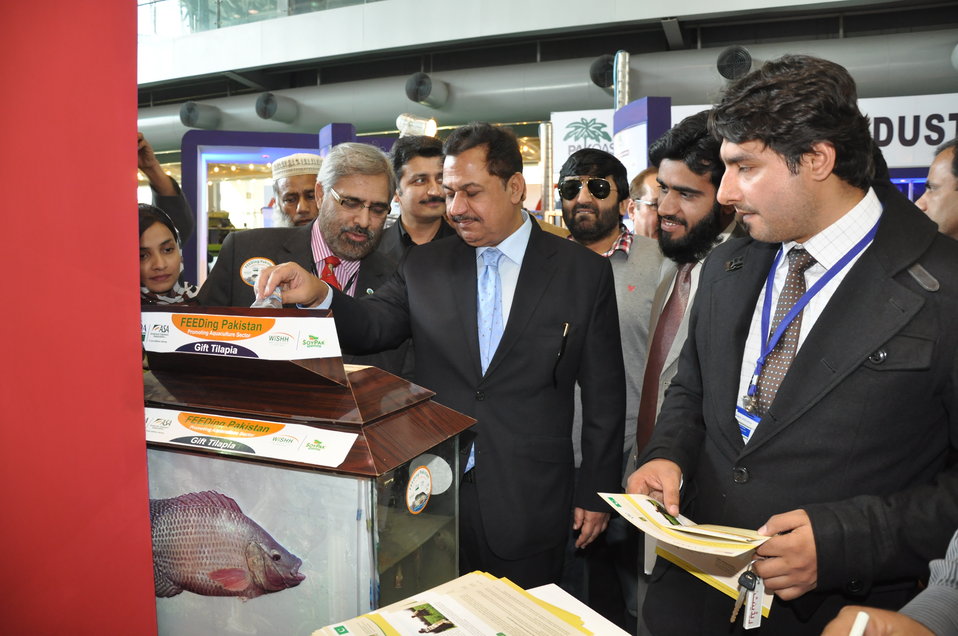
FEEDing Pakistan (Promoting Aquaculture Sector)

Minister Food Punjab-Dr Farrukh Javeed inaugurated giving soy-based floating extruded feed to Tilapia (GIFT) , with R.S.N. Janjua, Mr. Rashid Raja, USDA/FAS-Islamabad Country Rep. ASA/WISHH(SoyPak) at DAWN Sarsabz Pakistan Agri Expo 13March2014